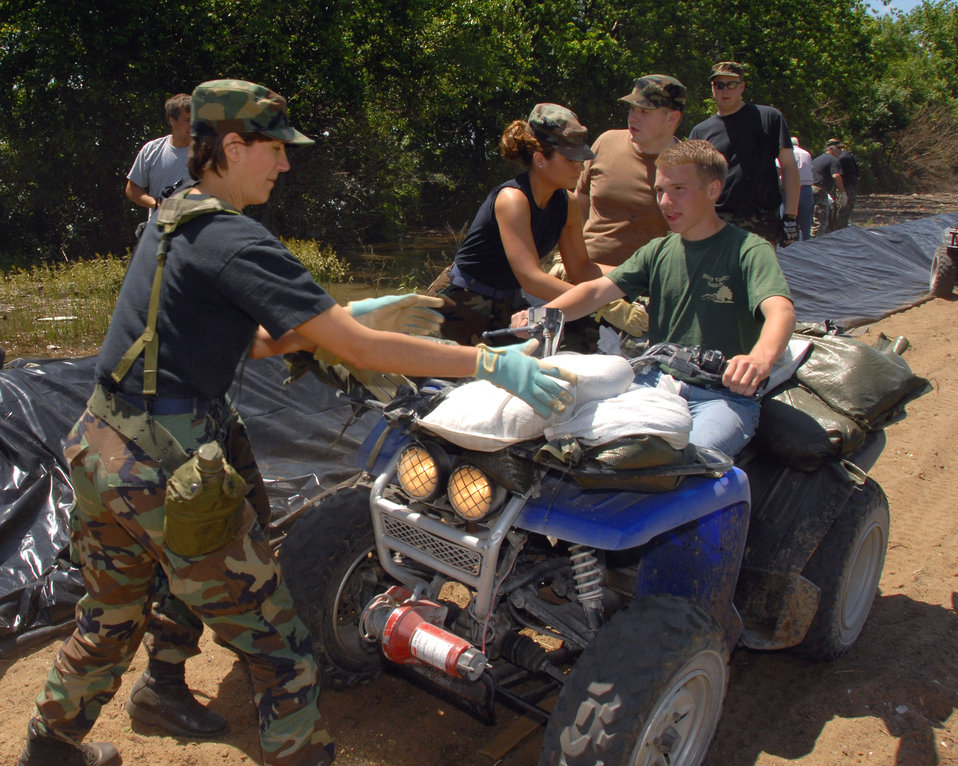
One bag at a time

Members of the Iowa Air National Guard's 185th Air Refueling Wing pull sandbags from a resident's all-terrain vehicle on a levee north of Burlington, Iowa. The 185th ARW mobilized 400 Airmen to fight flooding in eastern Iowa.